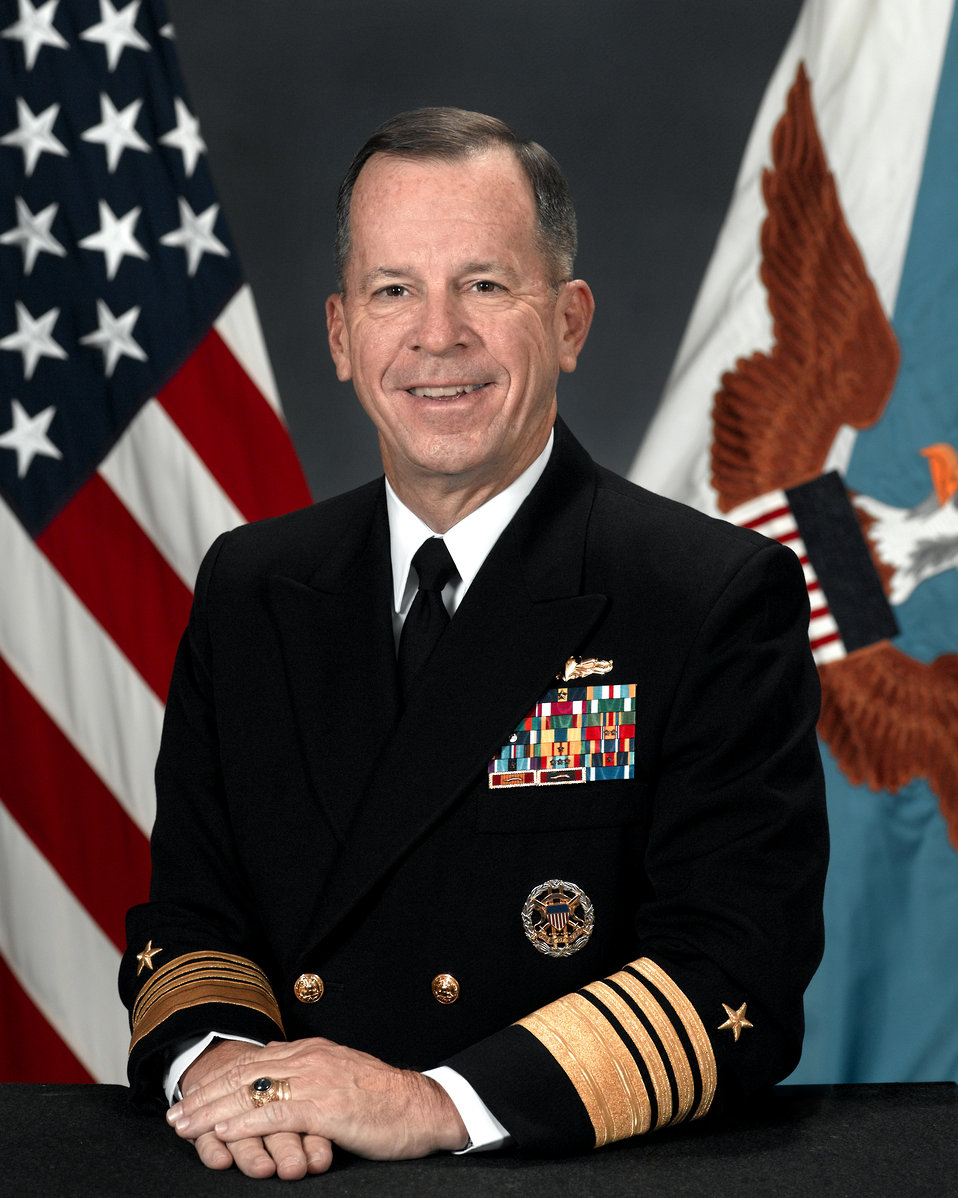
CJCS Thanksgiving Day message

Adm. Mike Mullen, chairman of the Joint Chiefs of Staff, sends Thanksgiving Day greetings and his personal thanks to all who serve, and their families, and hopes everyone has a safe and happy Thanksgiving holiday.